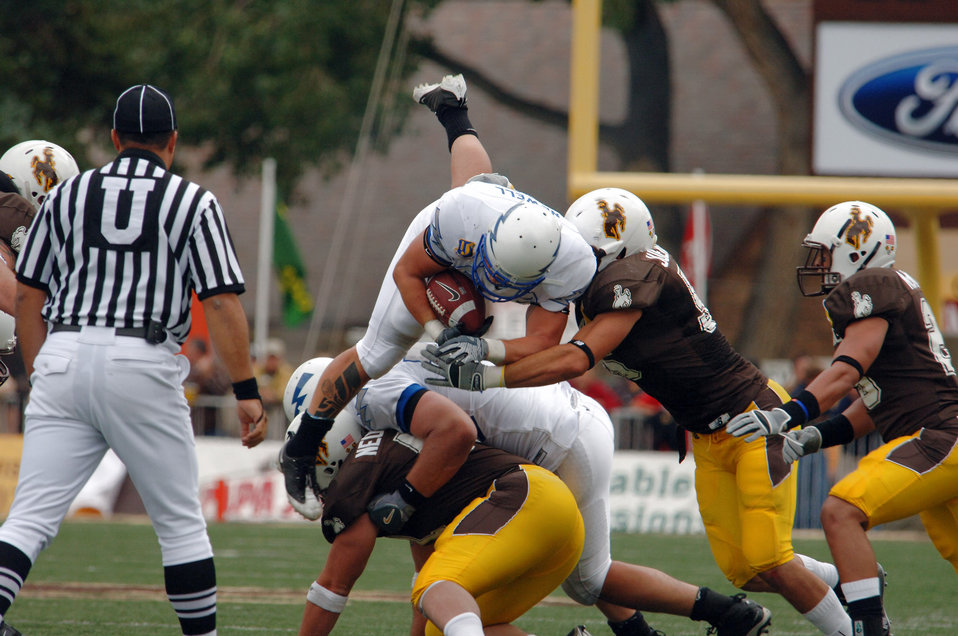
Football: Falcons defense stifles Wyoming, 23-3

U.S. Air Force Academy fullback Todd Newell dives over the top of Wyoming defenders for a first down Sept. 6 in Laramie, Wyo. Newell made eight carries for 23 yards and scored the game's final touchdown, in the Falcons' 23-3 win over Wyoming.